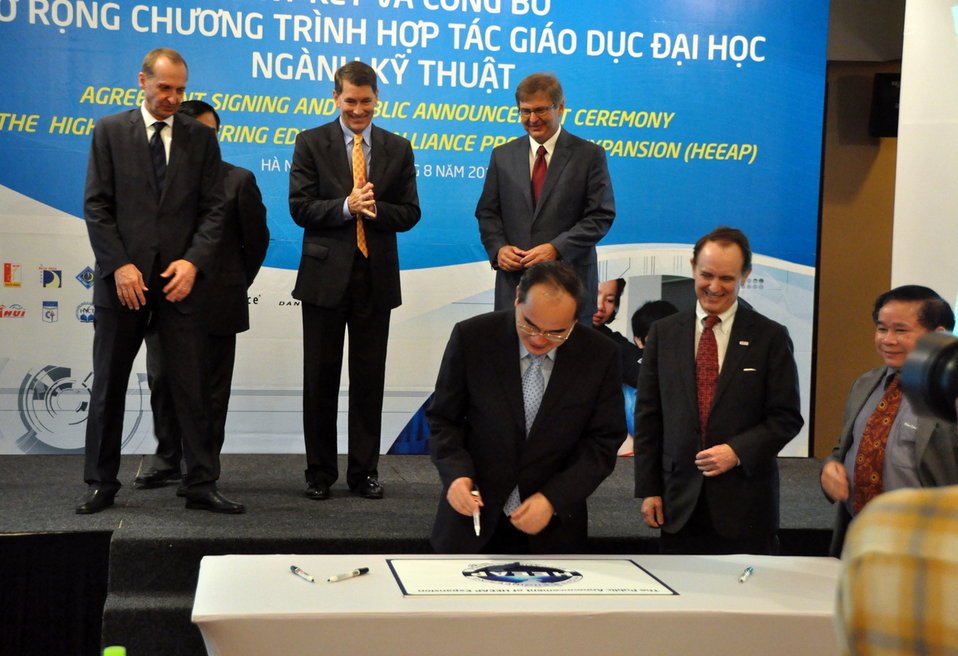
Higher Engineering Education Alliance Program Expansion Launch

Hanoi, August 20, 2012.